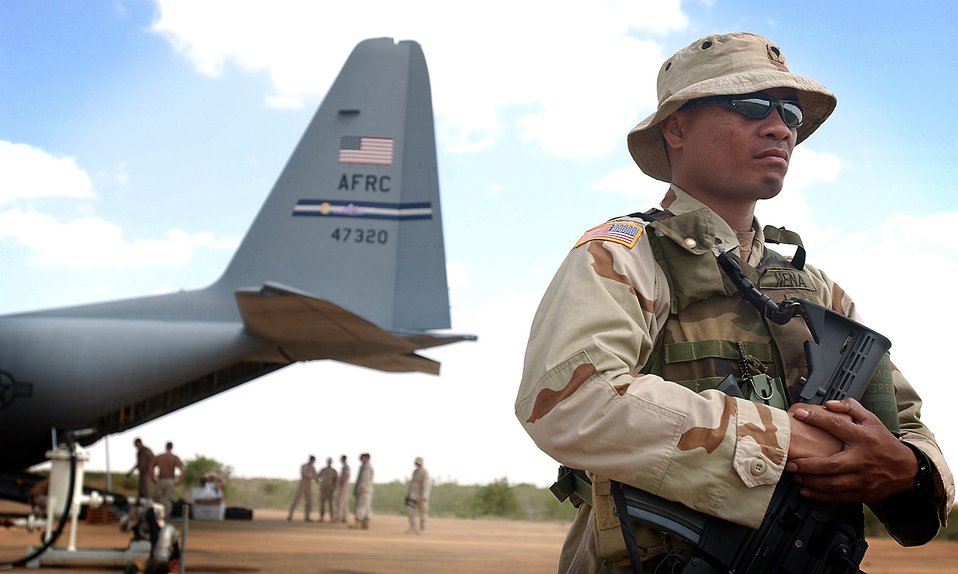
Standing guard

GODE, Ethiopia (AFPN) -- Army Spc. Tulen Nena stands guard while equipment is being off-loaded from a C-130 Hercules. Members of an Army well-drilling team from Montana are deployed here to dig four wells so people will have consumable water. Specialist Nena is with the Guam National Guard.